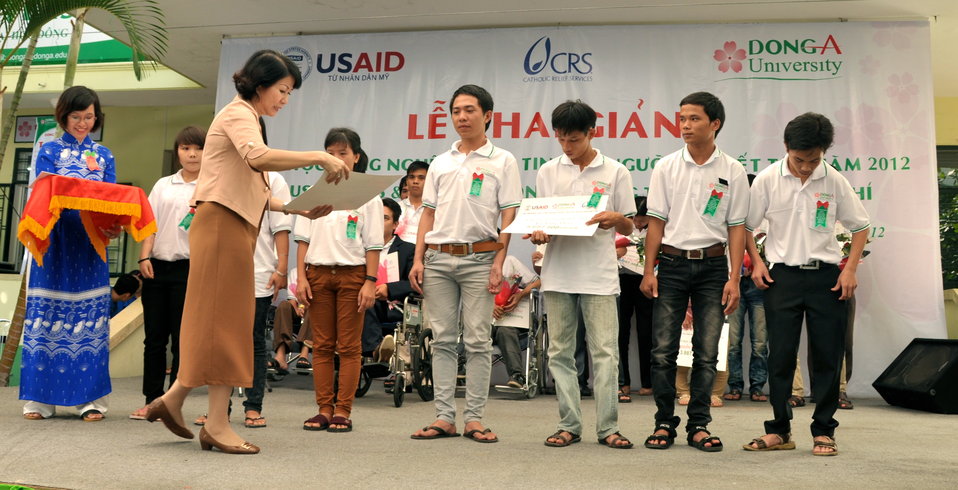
New class of students starts at Dong A Univeristiy with support from USAID and CRS

Photo: @USAIDVietnam
December 3, 2012